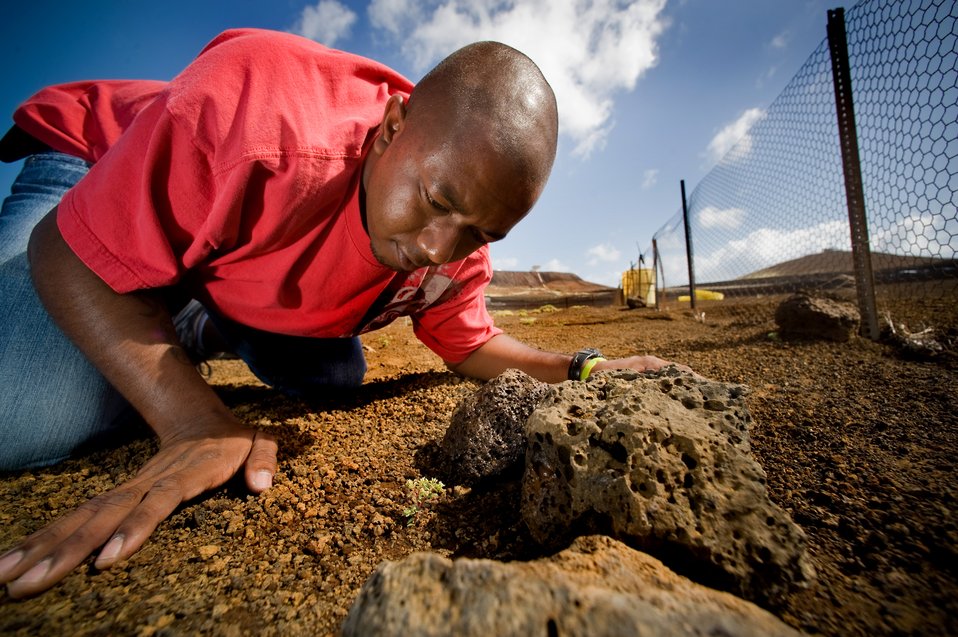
Robert's Plants

Robert Yon takes a break from a busy day to setup a wind break with some native volcanic rocks to protect the Ascension Spurge (E. origanoides), sprout, an endangered species of plant found only on the Ascension Island, and predominantly on the properties used by the 45th Operations Group, Detachment 2, Ascension Auxiliary Airfield (AAF), in the South Atlantic Ocean. Mr. Yon a certified environmental technician works with 13 protocols of engineering and the environment. Some of those are hazardous waste and PCB protocols. The small plot of land he cultivates supports seed collection by a British conservation organization on the island. Although, all U.S. Air Force bases have environmental programs, this small remote island environment allows easy observation of the efforts supporting the endangered spurge plant and self-sufficient water, power and waste programs.